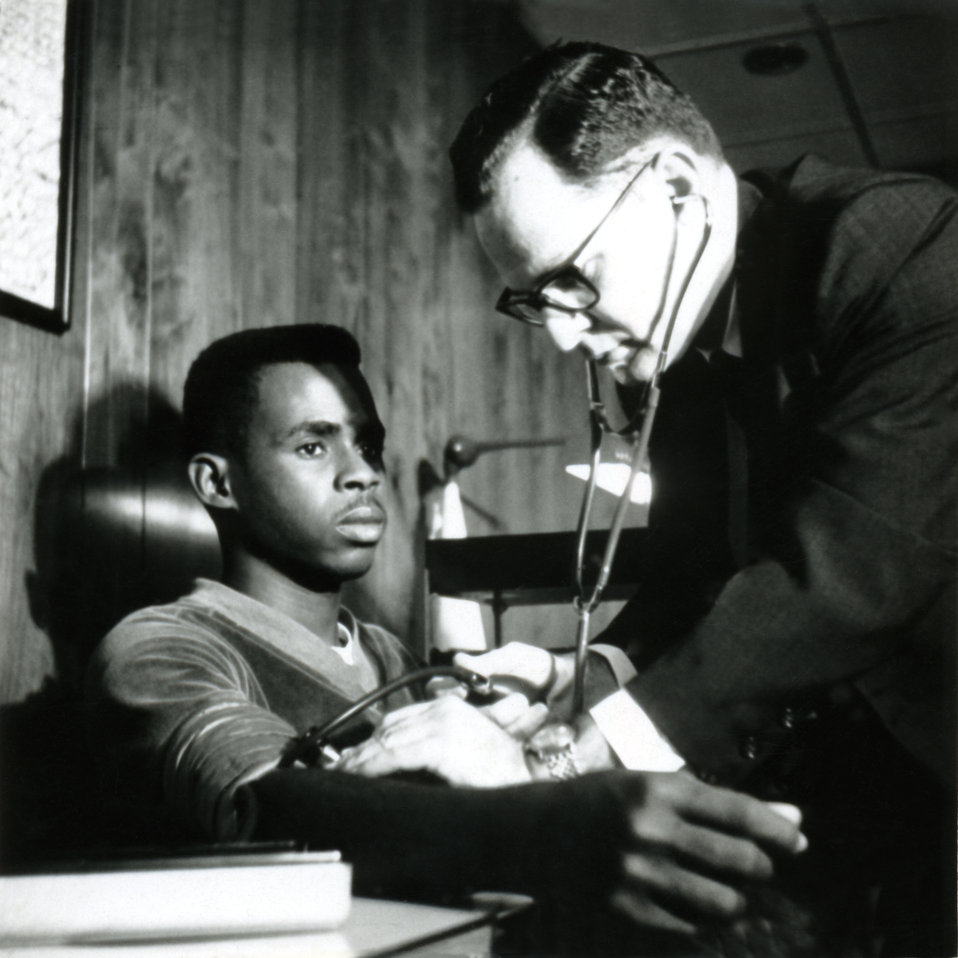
This 1950s historical photograph was provided by the Center for Disease Control's (CDC), National Institute for Occupational Safety and Health (NIOSH). The image depicted a physician who was examining a worker whose job it was to 'formulate', or mix, chemical pesticides for spraying. Such a task would bring the worker into close proximity with toxic chemicals, and therefore, would need stringent oversight by a regulating body such as NIOSH, which would make the health and welfare of such workers a paramount concern. This physician was using a stethoscope and sphygmomanometer, or blood pressure cuff, in order to determine the patient's blood pressure.